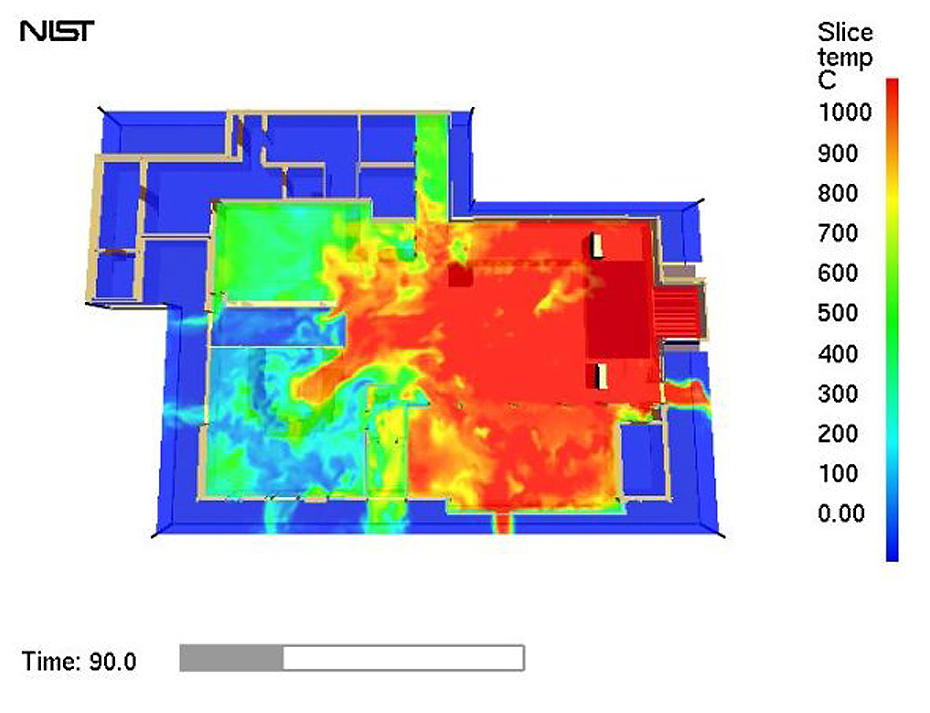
The Station nightclub

Computer model of fire at The Station nightclub showing the temperature variation after 90 seconds at 0.6 meter (2 feet) above the floor.

See also www.nist.gov/public affairs/releases/mar 3 05 ribriefing.htm.